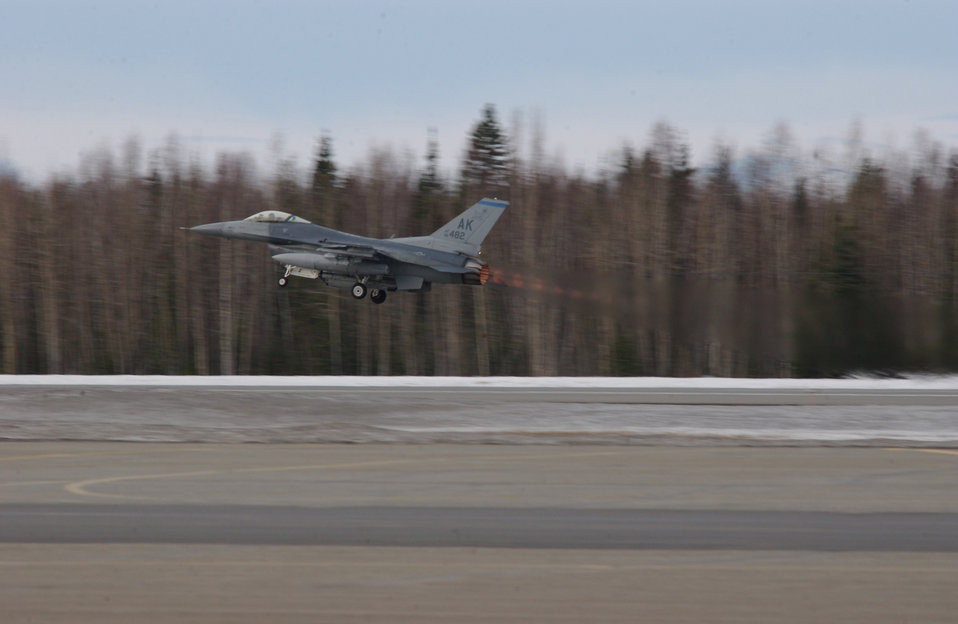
Alaskan Falcon

EIELSON AIR FORCE BASE, Alaska -- An F-16 Fighting Falcon from the 18th Fighter Squadron here takes off from the flightline April 9 as a part of the wing's operational readiness exercise.